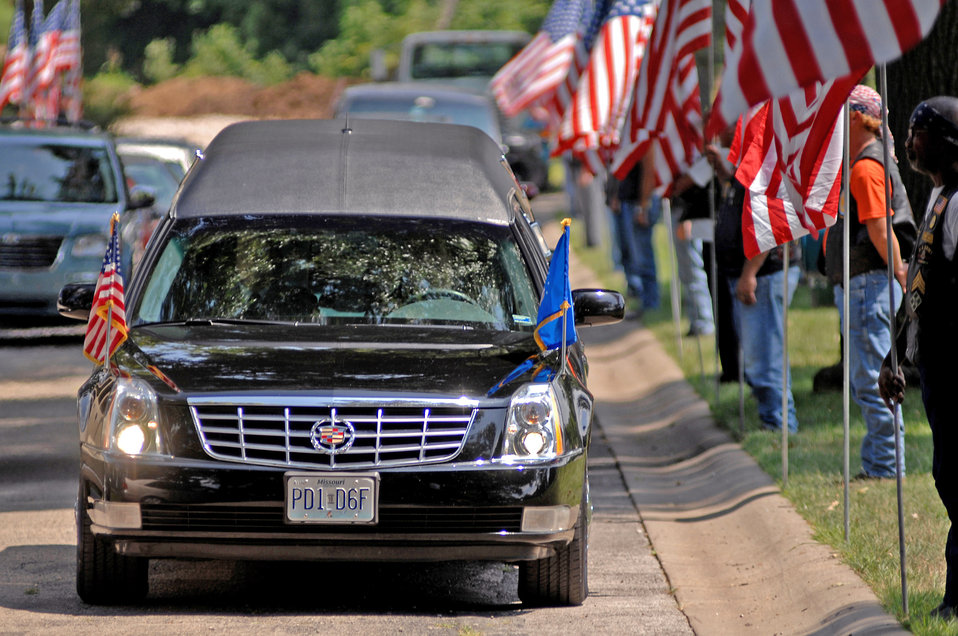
War hero brought home, laid to rest after 30 years MIA

A hearse containing the casket of Chief Master Sgt. Quincy Adam makes its way to his grave site July 27 at Chapel Hill Memorial Cemetery. Chief Adam is a Vietnam War veteran who was missing in action for more than 40 years. Chief Adam's remains were discovered in Southeast Asia, and he was finally brought home to be laid to rest, giving his family closure in their lives.